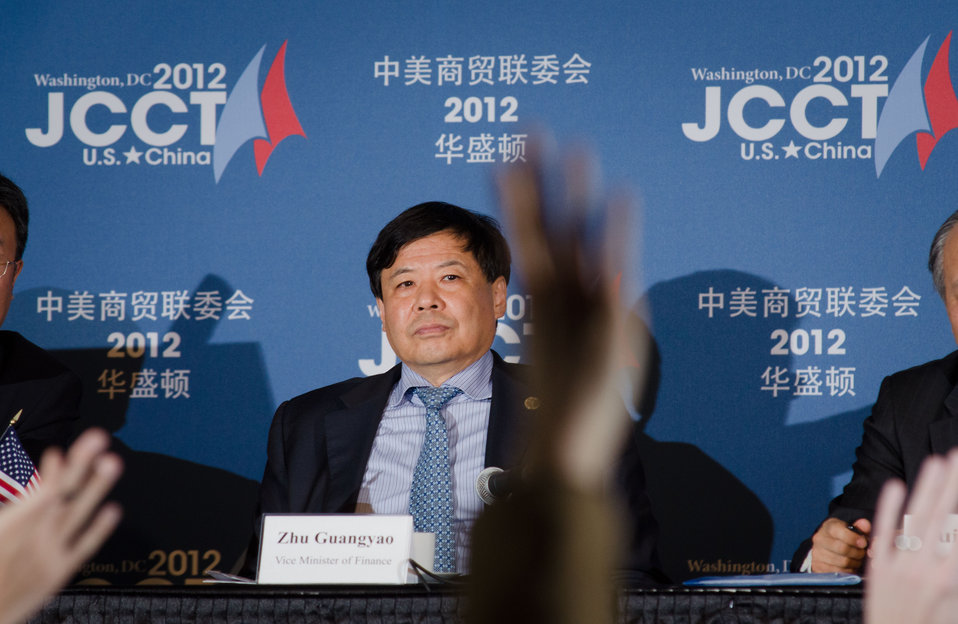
China’s Vice Minister of Finance Zhu Guangyao waits to hear the next question from international news media journalists, at the 23rd Session of the U.S. China Joint Commission on Commerce and Trade (JCCT) press conference at the Andrew W. Mellon Auditorium in Washington, D.C. Wednesday, Dec. 19, 2012. The JCCT holds high-level plenary meetings on an annual basis to review progress made by working groups that focus on a wide variety of trade issues. These working groups meet throughout the year to address topics such as intellectual property rights, agriculture, pharmaceuticals and medical devices, information technology, tourism, commercial law, environment, and statistics.